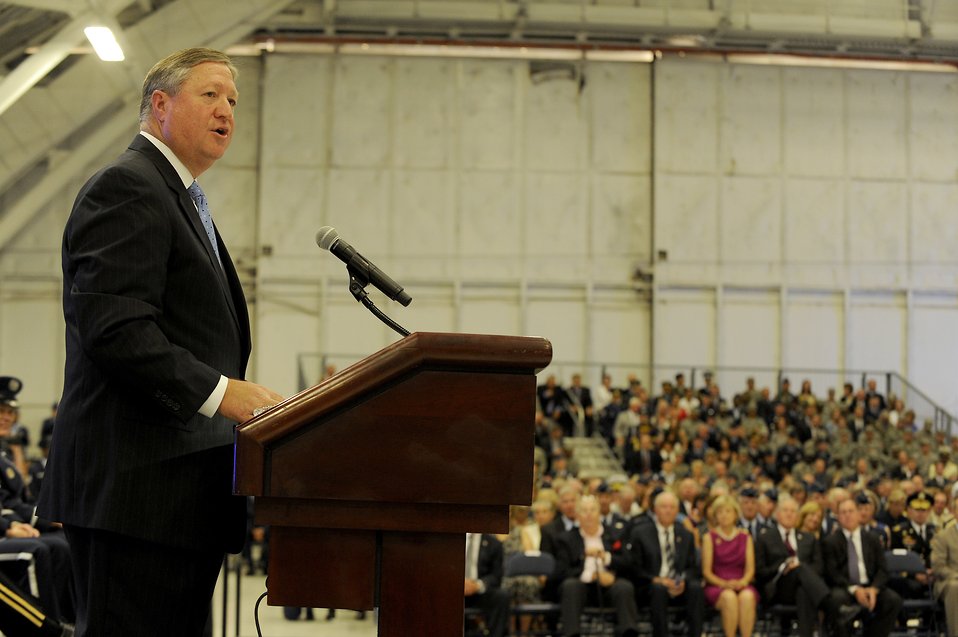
Welsh ‘humbled’ to serve as Air Force chief of staff

Secretary of the Air Force Michael Donley speaks to the audience during the chief of staff transition ceremony honoring Gen. Norton Schwartz and Gen. Mark A. Welsh III at Joint Base Andrews, Md., Aug. 10, 2012. Schwartz served in the Air Force for 39 years, the last four years as the Air Force's senior uniformed leader. Prior to becoming the Air Force chief of staff, Welsh commanded U.S. Air Forces in Europe.